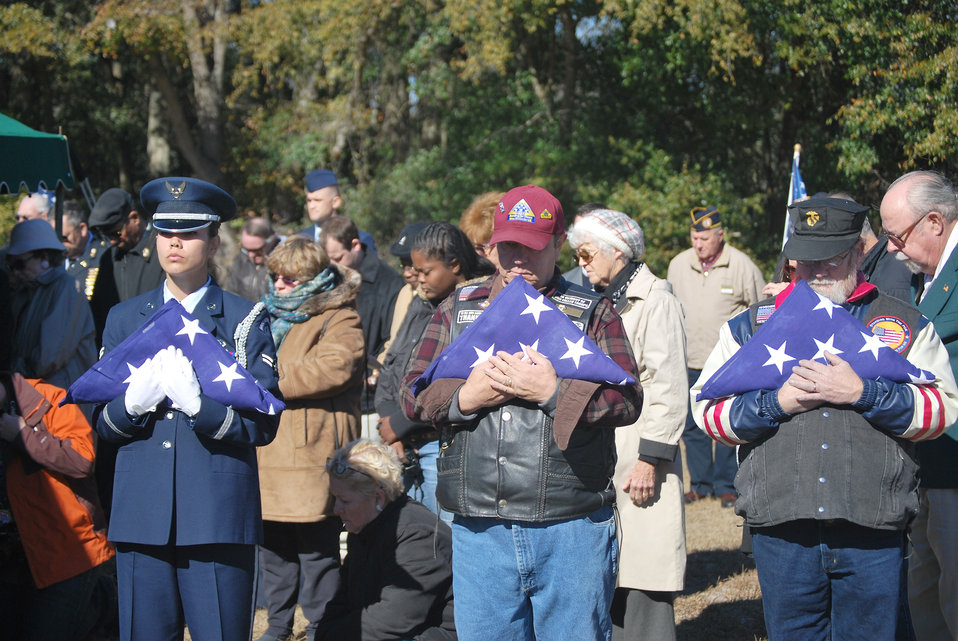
Bringing the Fallen Back Home

Members of the Patriot Guard and the Eglin Air Force Base Fla., Honor Guard hold flags to be presented to the family of 1st Lt. Robert Franklin Dees, Jan. 22, 2011.